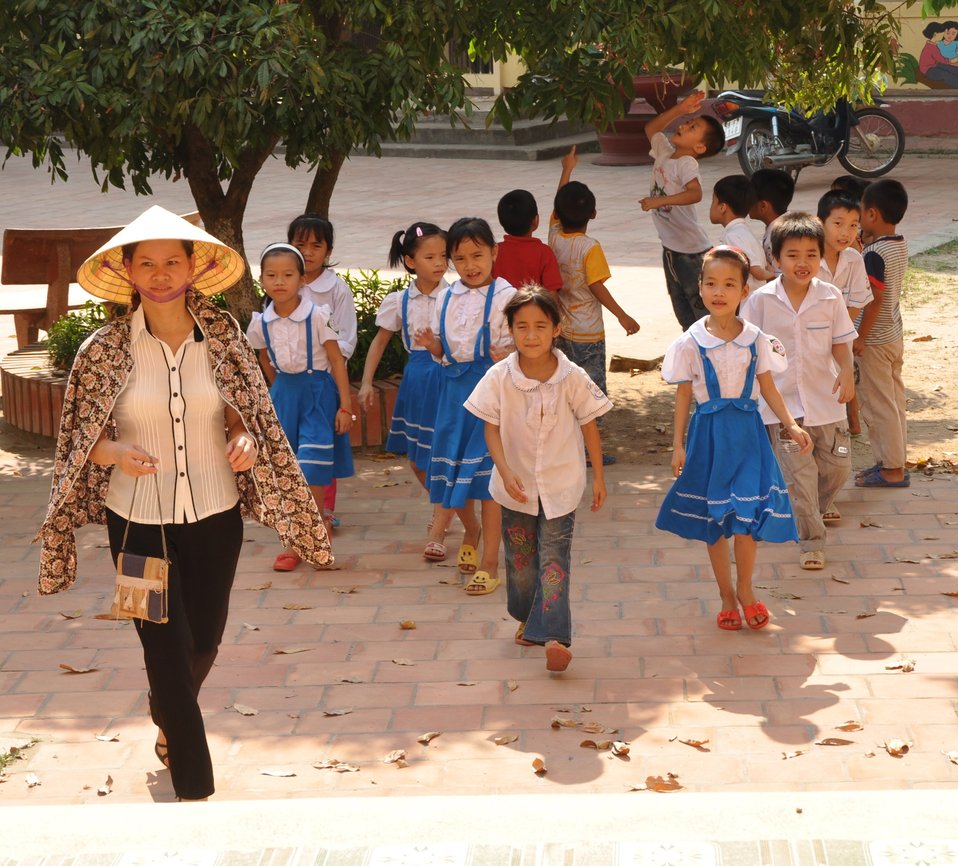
USAID supports deworming education and medication distribution in Bac Giang Province

May 20, 2013